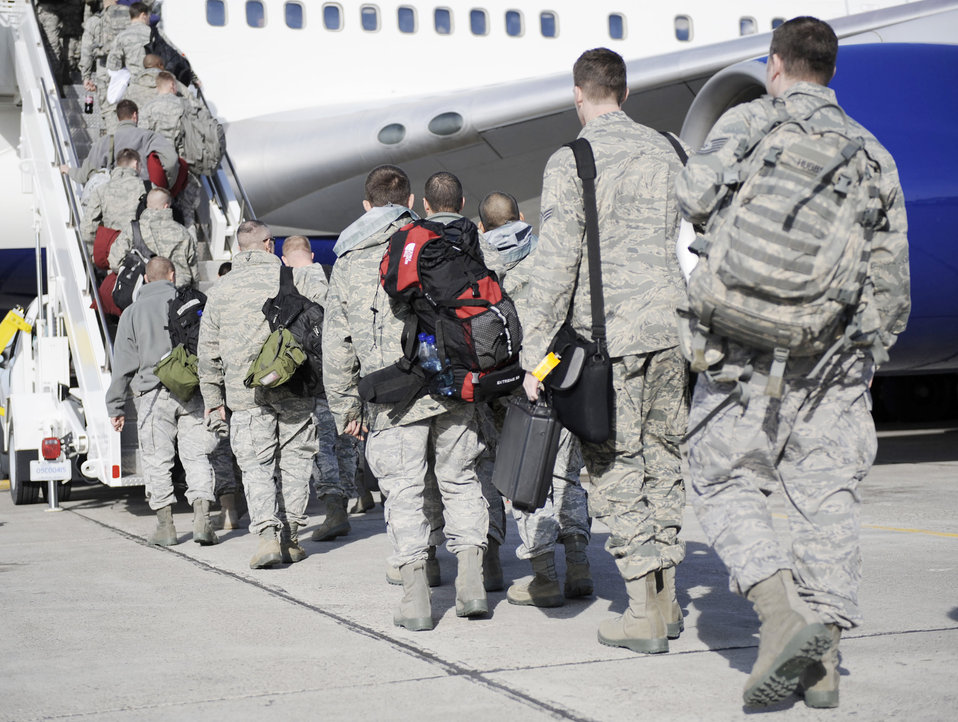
Squadron goes to South Korea

About 300 Airmen with the 391st Fighter Squadron board the commercial transport aircraft for deployment to South Korea, Jan. 18, 2010, at Mountain Home Air Force Base, Idaho. The deployed Airmen will work alongside alliance partners to maintain peace and stability in the region.